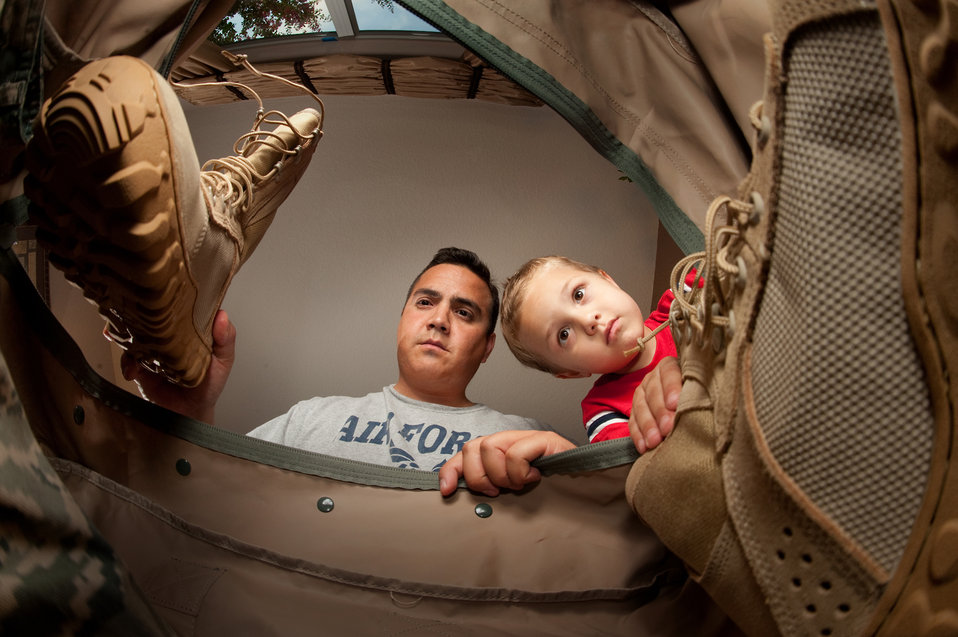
I'll keep this boot

Using the task to help his son understand his deployment, Master Sgt. Rudy Gamez gets his son, Tomas, to assist him July 12, 2010, while packing at his home in San Antonio. Sergeant Gamez and his wife are both deploying soon and will blog about their experiences.